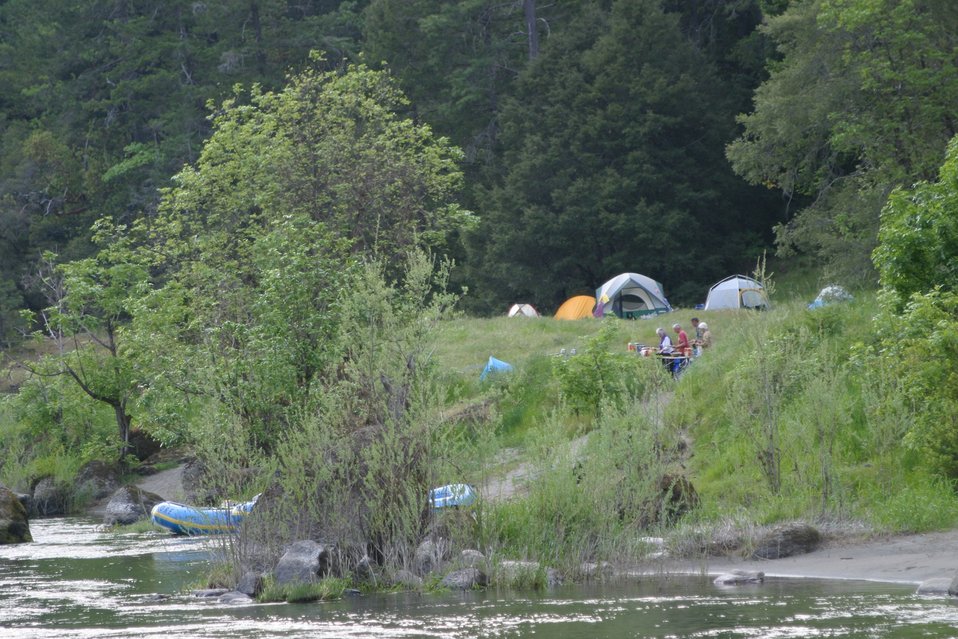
Wild section of the Rogue River from Grave Creek to Foster Bar May 19 to May 22.